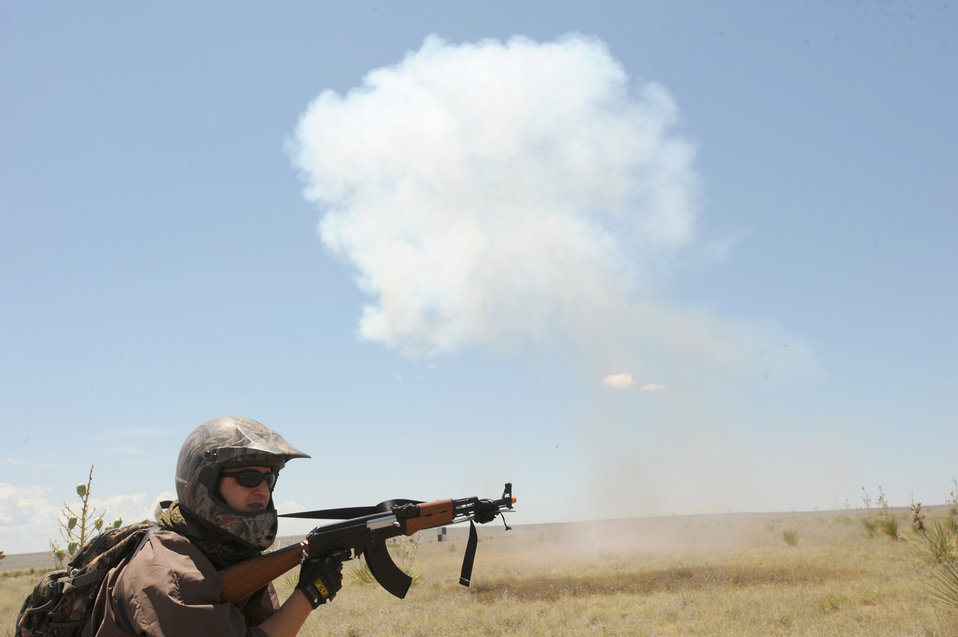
Cannon capabilities exercise

Staff Sgt. Kirk Baerlocher keeps watch as ground burst simulators explode all around during a capabilities exercise, June 26, 2010, at Cannon Air Force Base, N.M. The exercise gave insight into Cannon AFB's mission and capabilities. Sergeant Baerlocher is assigned to the 551st Special Operations Squadron.